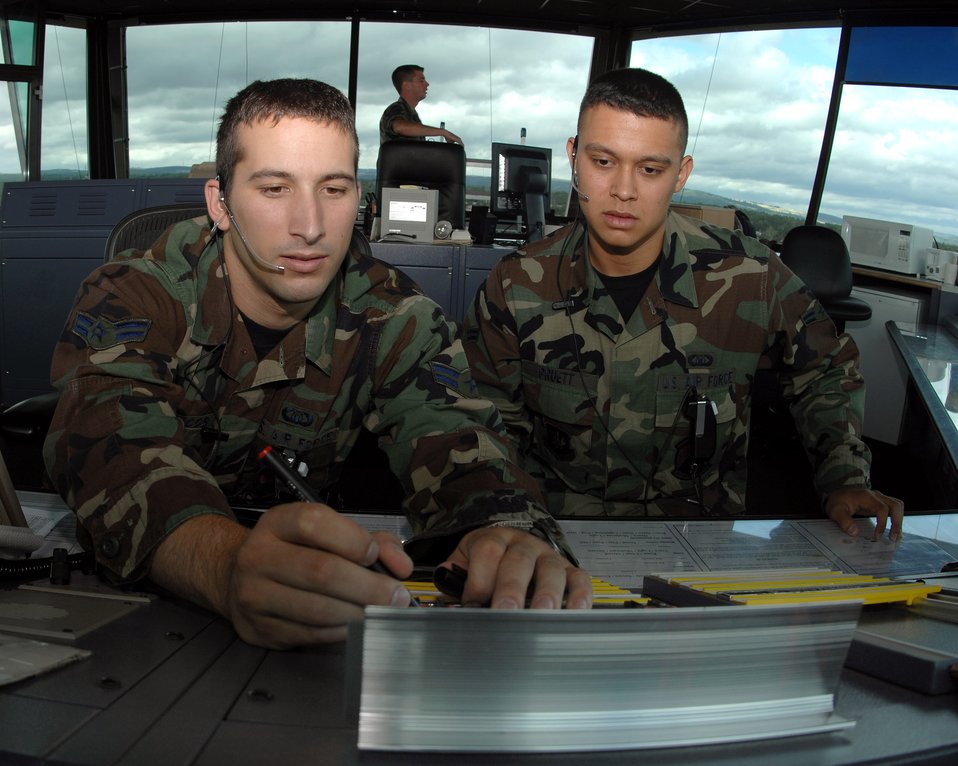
Guidance from above

Airman 1st Class Toby Jacob (left) writes coordinates of an inbound aircraft on a flight progress strip while Airman 1st Class Earl Pruett talks to the pilot over the radio using a radio ear piece June 26 in the control tower at Ramstein Air Base, Germany. The Airmen are assigned to the 86th Operations Support Squadron.